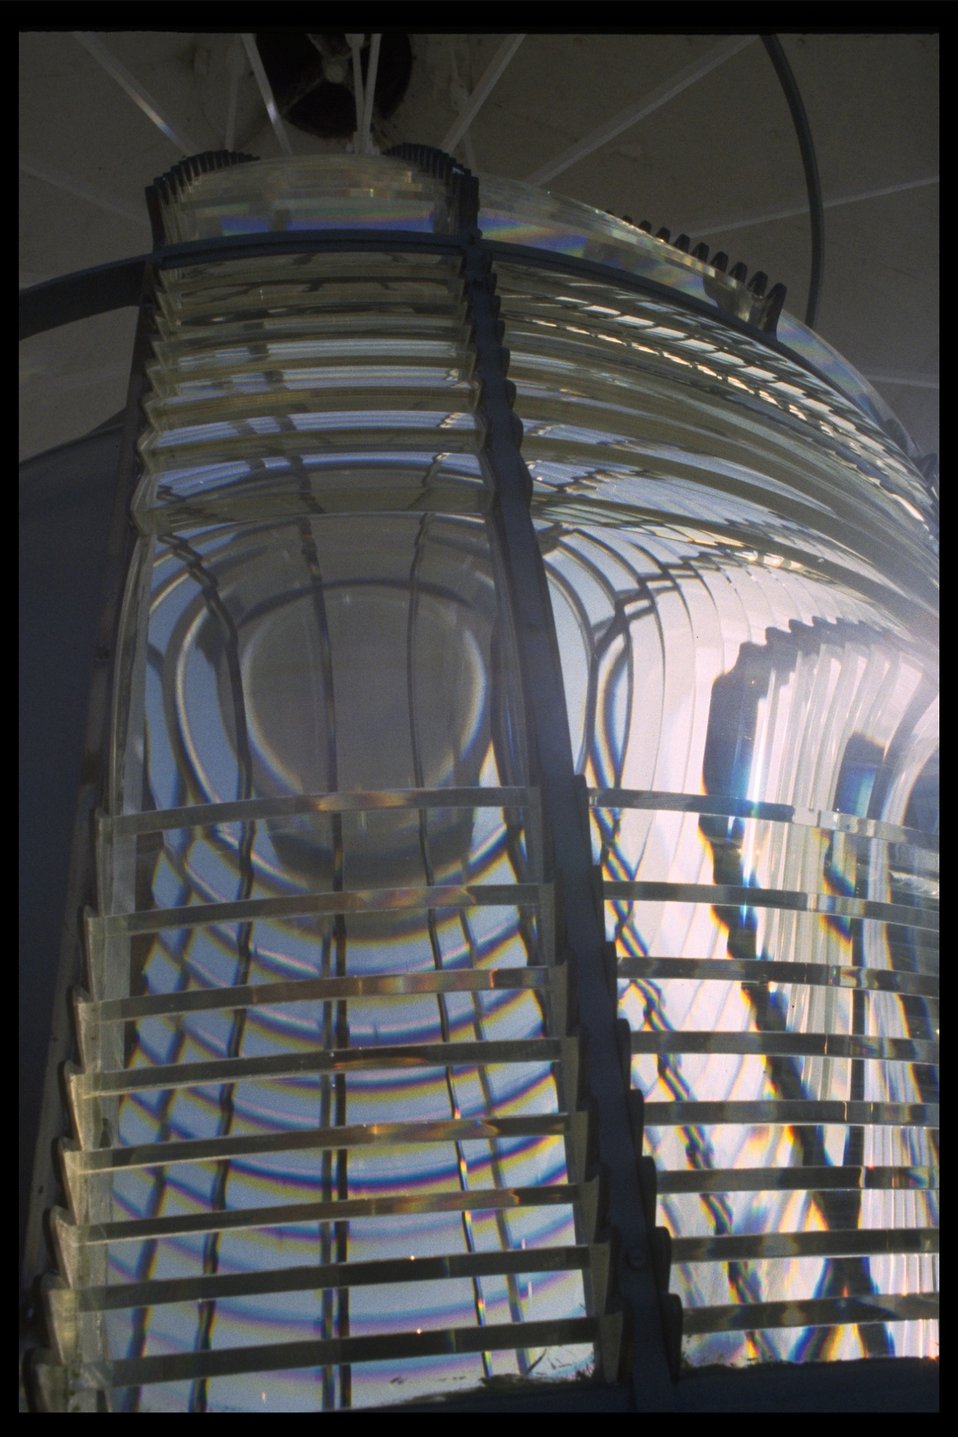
Yaquina Head lighthouse lens.